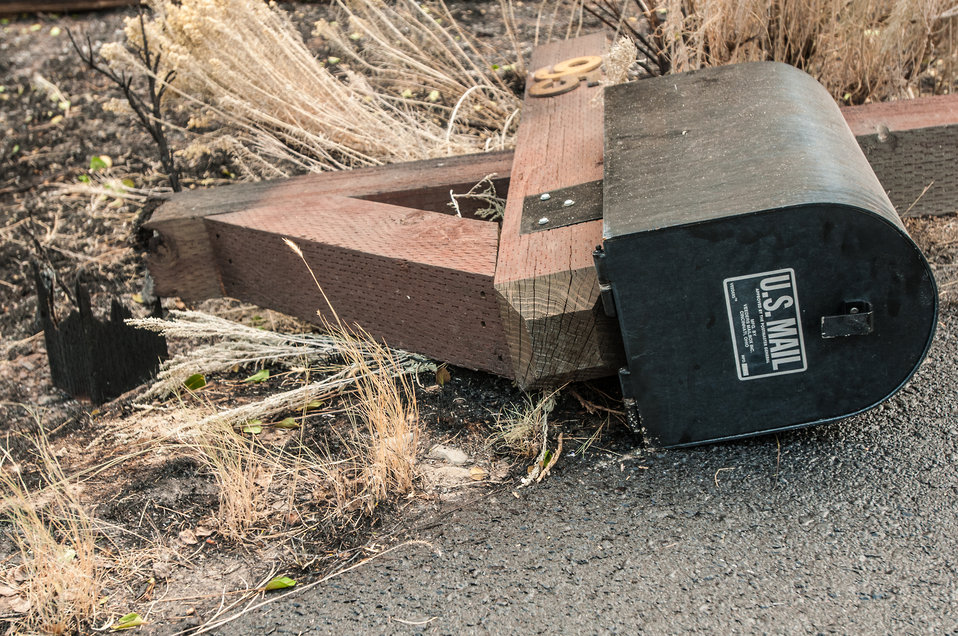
Thanks to the efforts of Wildlands Firefighters, the Beaver Creek Fire, near of Hailey, ID, claimed only some grass, fencing and the mailbox post on this property, in the interface with U.S. Department of Agriculture (USDA) Forest Service (FS) and Sawtooth National Forest and Bureau of Land Management (BLM) lands on Wednesday, Aug 21, 2013.